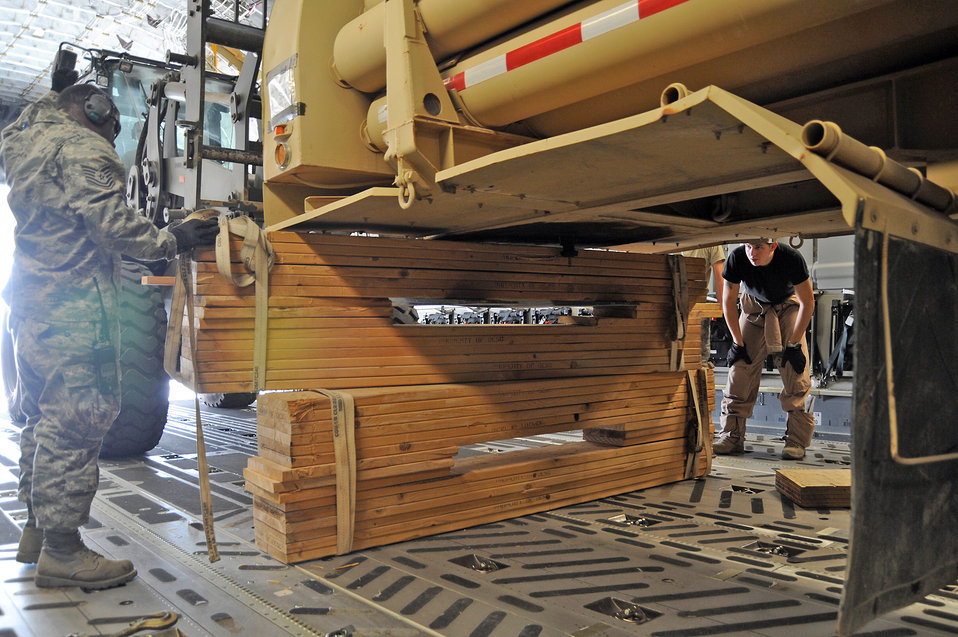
380th

Tech. Sgt. Joseph Munn directs the placement of wooden beams to secure a 25-foot bulk helium trailer as part of a helium loading mission Aug. 24, 2010 at a non-disclosed base in Southwest Asia. Sergeant Munn is the non-commissioned officer in charge of the Air Terminal Operations Center with the 380th Expeditionary Logistics Readiness Squadron. The 380th ELRS delivers approximately 90,000 pounds of helium per week to the area of responsibility.